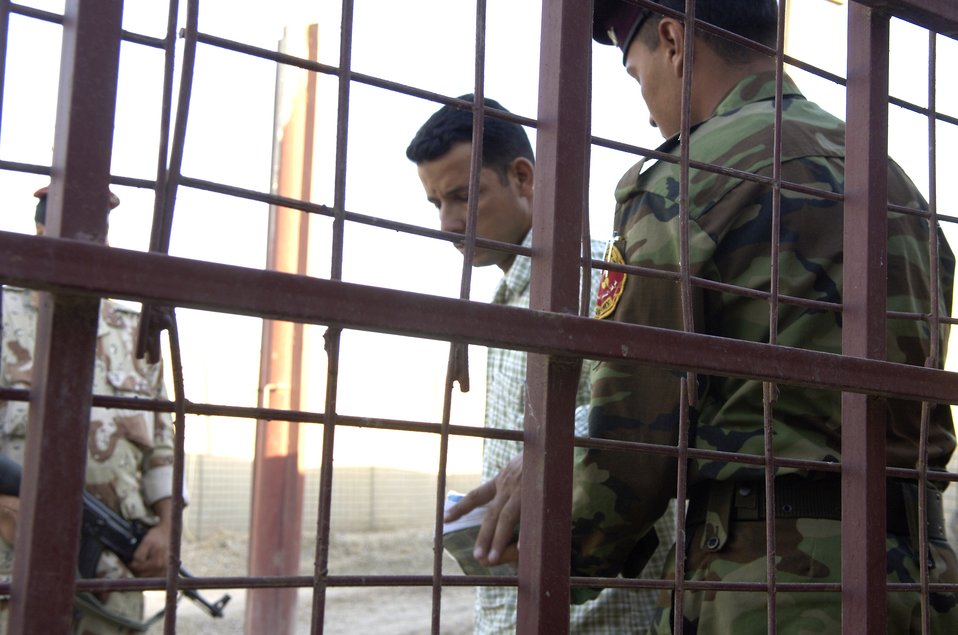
Airmen train Iraqi soldiers on base defense

An Iraqi soldier searches a worker entering Ar Rasheed Base, Iraq, on Friday, May 26, 2006. Each morning hundreds of workers line up to enter the base. The soldiers search every person and vehicle that enters. Each soldier is trained and advised by five security forces Airmen and their Army commander who live and work on the base.